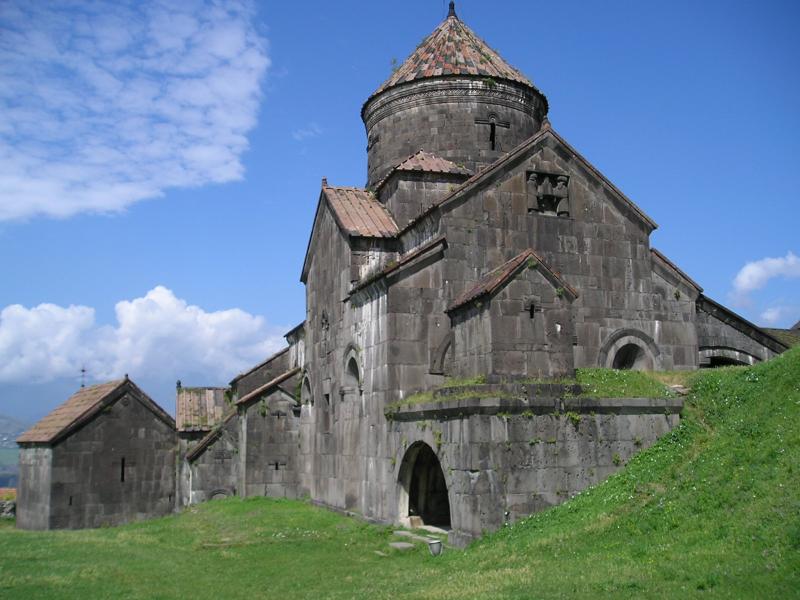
Haghpat-Nshan